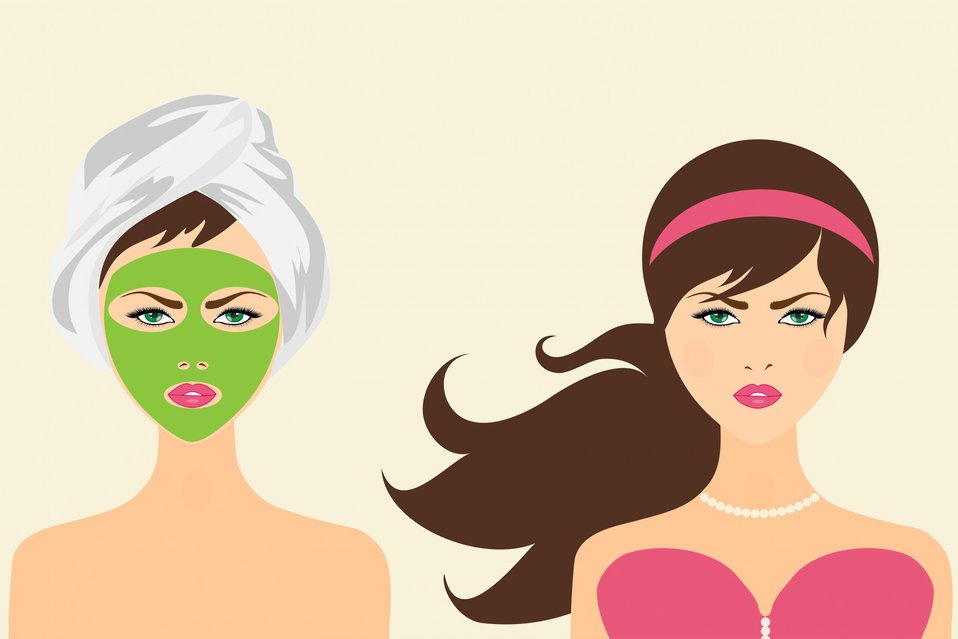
Beauty treatment makeover woman

Beautiful brunette woman in before and after picture receiving beauty face mask.